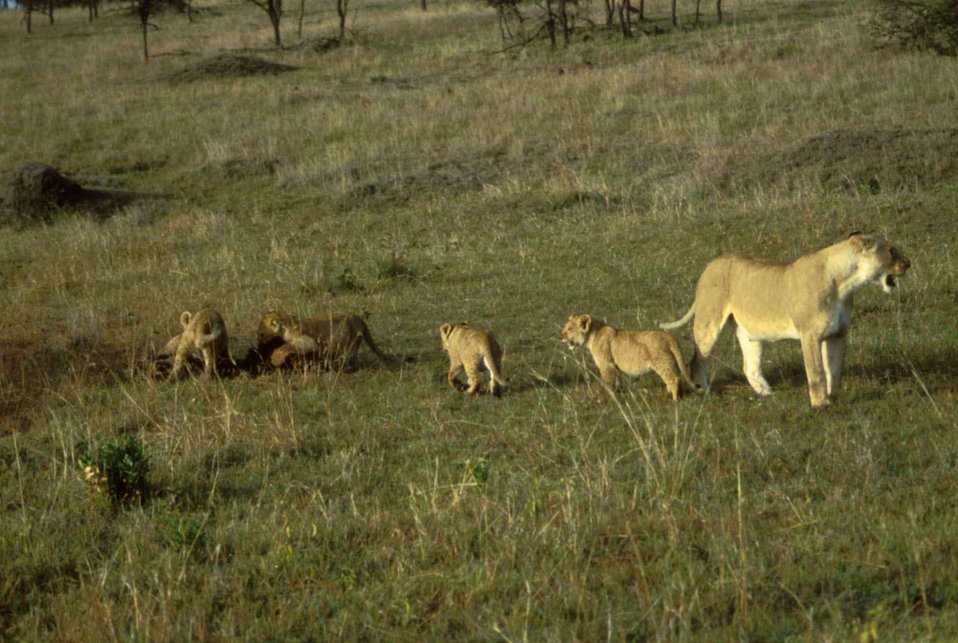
English:
Image title: Female lion with cubs mammals Image from Public domain images website, http://www.public-domain-image.com/full-image/fauna-animals-public-domain-images-pictures/lion-public-domain-images-pictures/female-lion-with-cubs-mammals.jpg.html